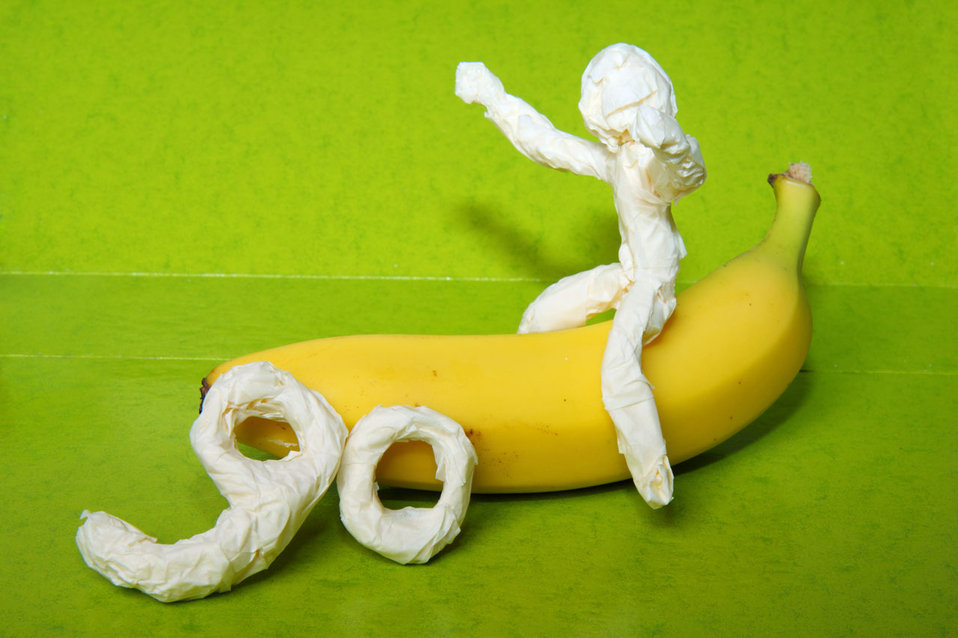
Go banana

Person riding banana on green background.